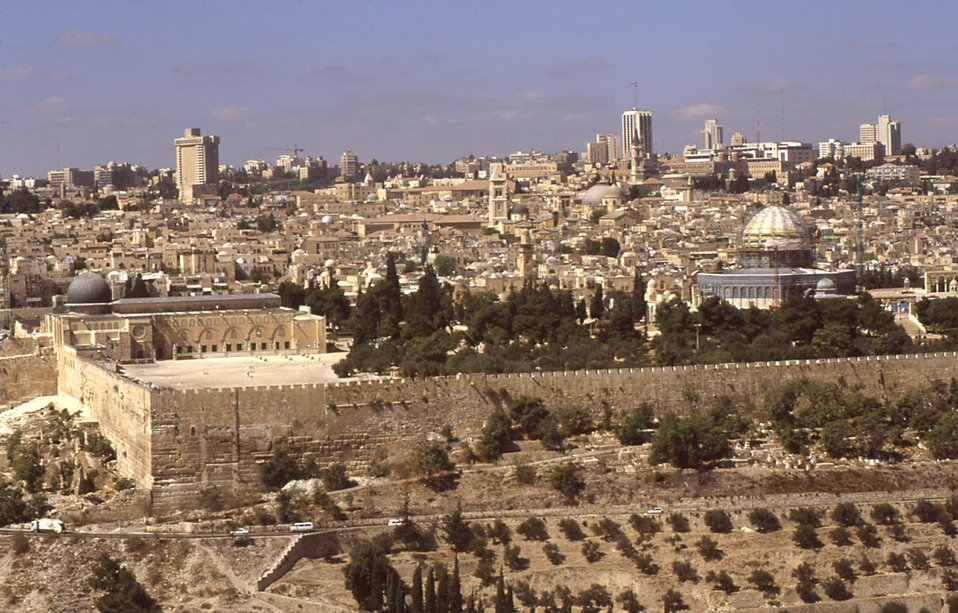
This was a view of Jerusalem, Israel, October 1993, while atop the Mount of Olives.